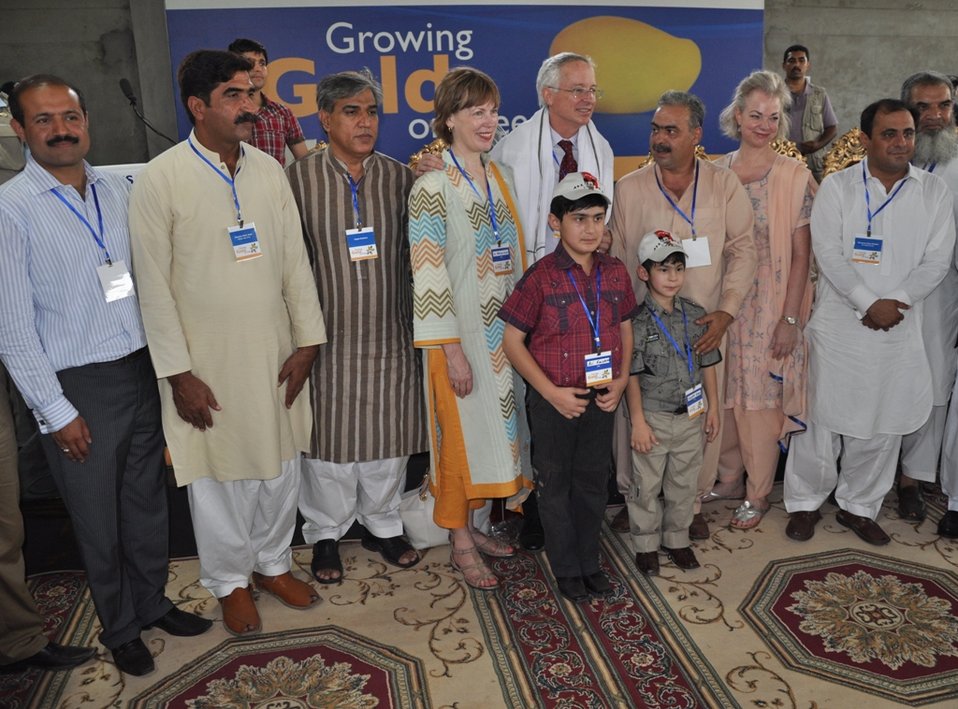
U.S. Helps Pakistani Farmers Export Mangos